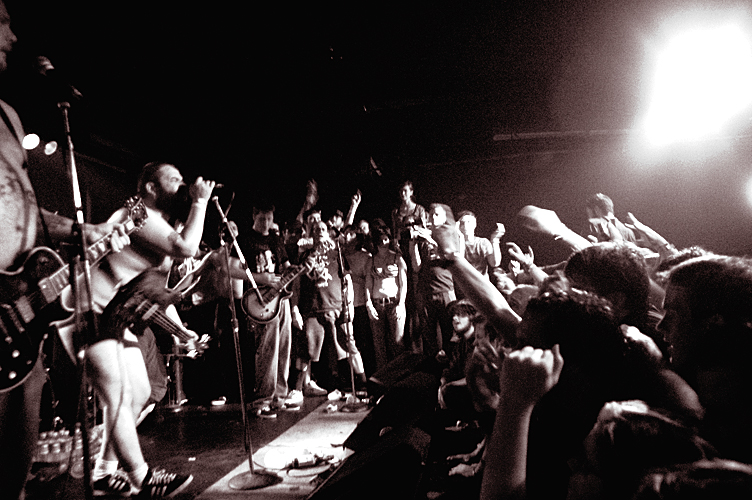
Dillinger Four, Fest Five, October 29th, 2006.